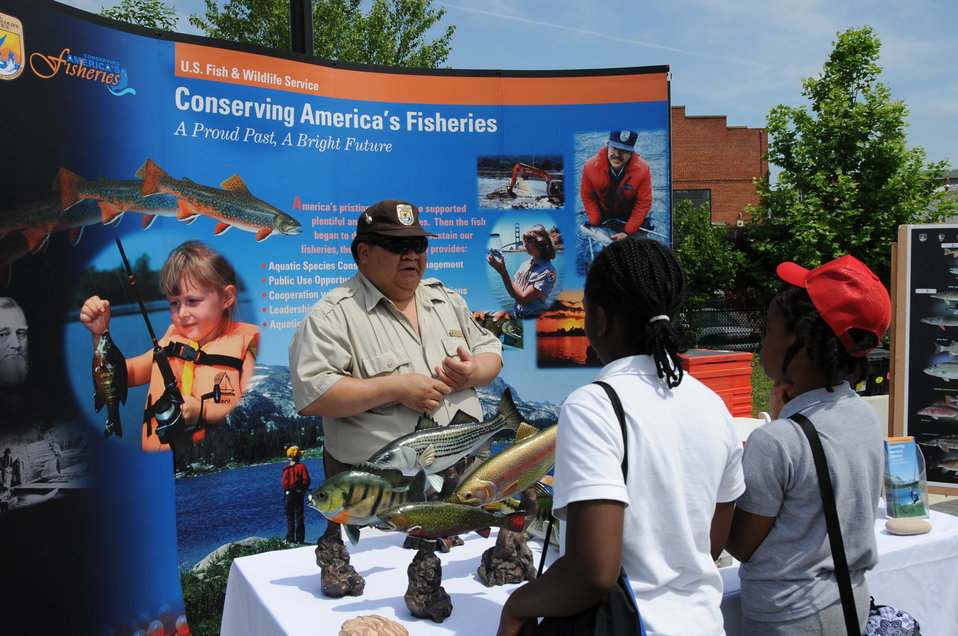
2013 National Fishing and Boating Week

Local students prepare to enjoy fishing at the annual kick-off of National Fishing and Boating Week on the Anacostia River in Washington D.C.